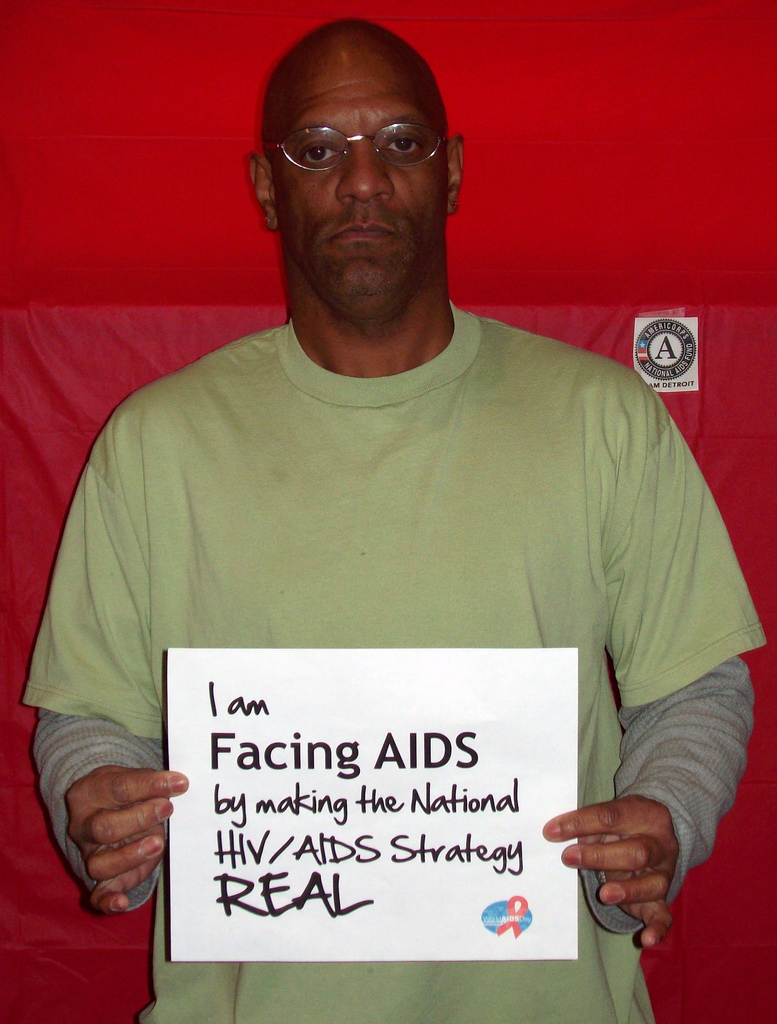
I am Facing AIDS through NHAS-16